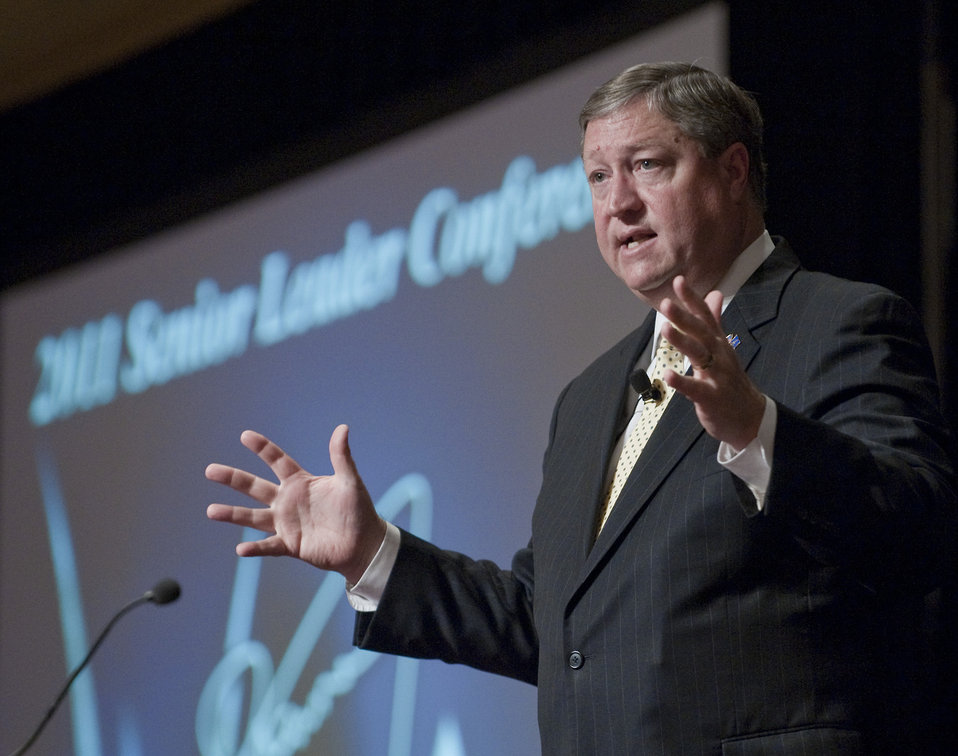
Air Force Reserve Command Senior Leader Conference

Secretary of the Air Force Michael Donley addresses Air Force Reserve Command senior leaders May 16, 2011, during their annual conference in Washington, D.C.